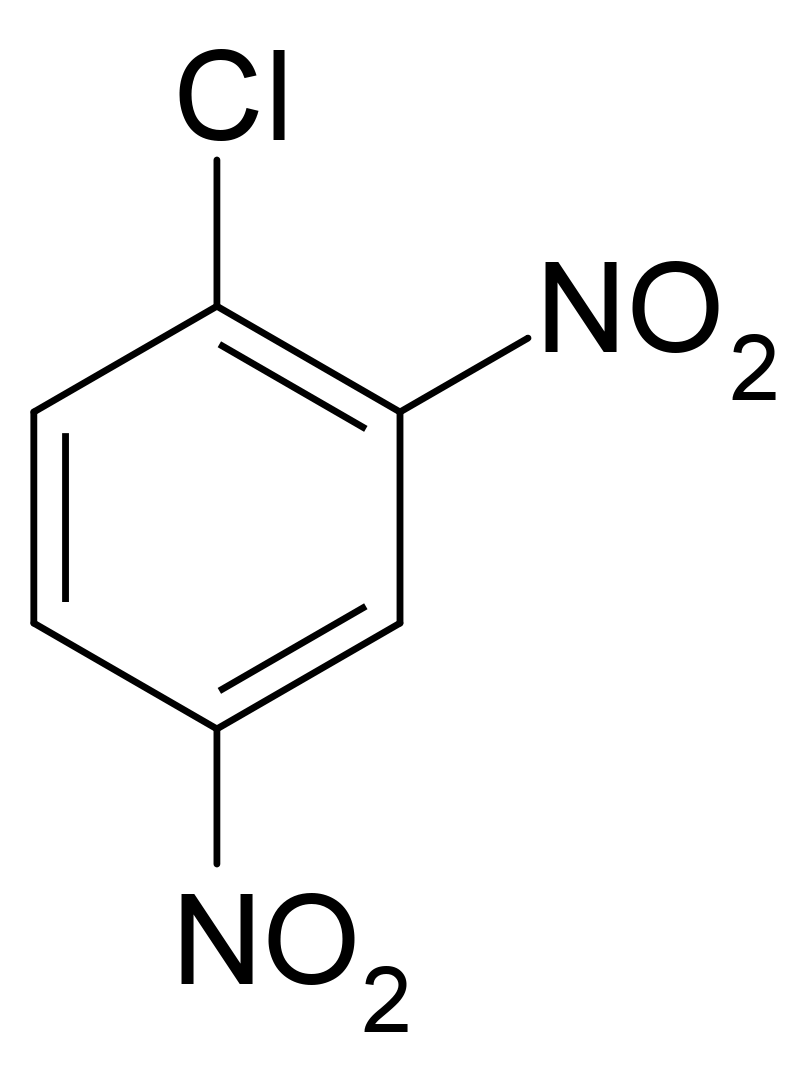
Italiano: formula di struttura dell'1-cloro-2,4-dinitrobenzene disegnata da Paginazero Deutsch: Strukturformel von 1-Chlor-2,4-dinitrobenzen